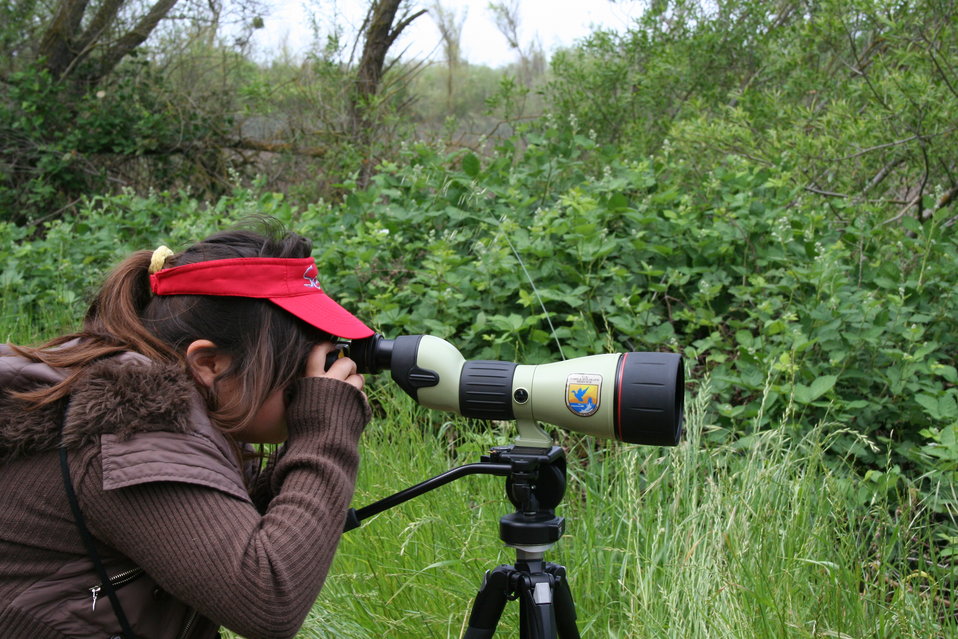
Birding on Stone Lakes National Wildlife Refuge